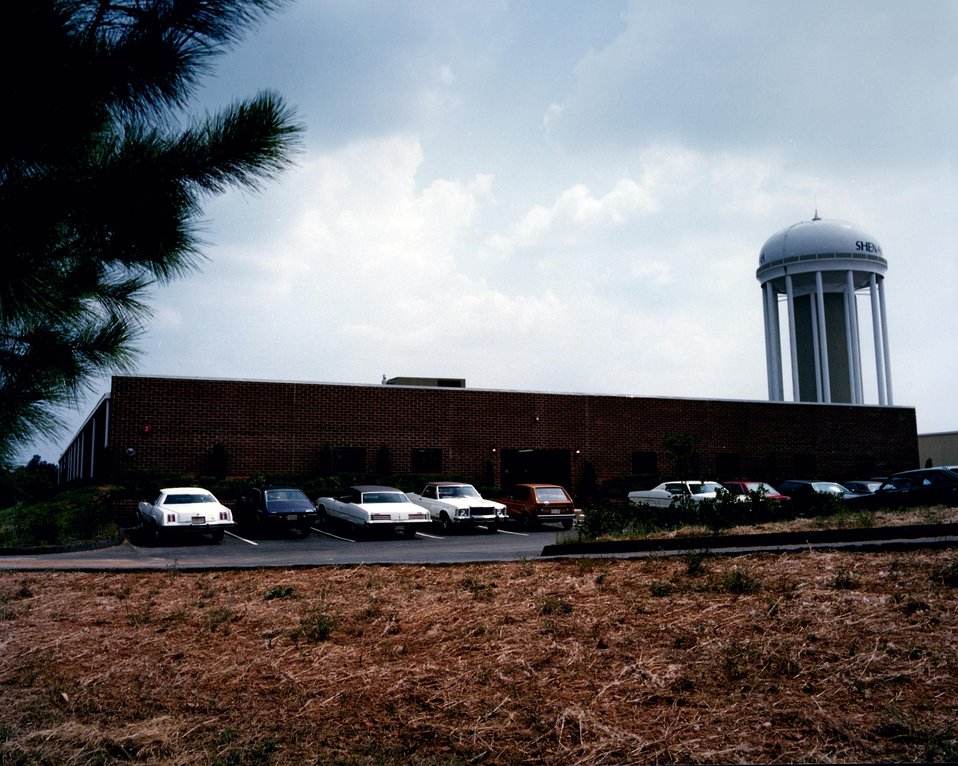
FRONT OF THE BLEYLE KNITWEAR MANUFACTURING PLANT.

THE PLANT WILL BE FITTED WITH AN EXPERIMENTAL SOLAR SYSTEM TO SUPPLY ELECTRICITY, HEATING, STEAM PROCESS HEAT, HOT WATER AND COOLING.